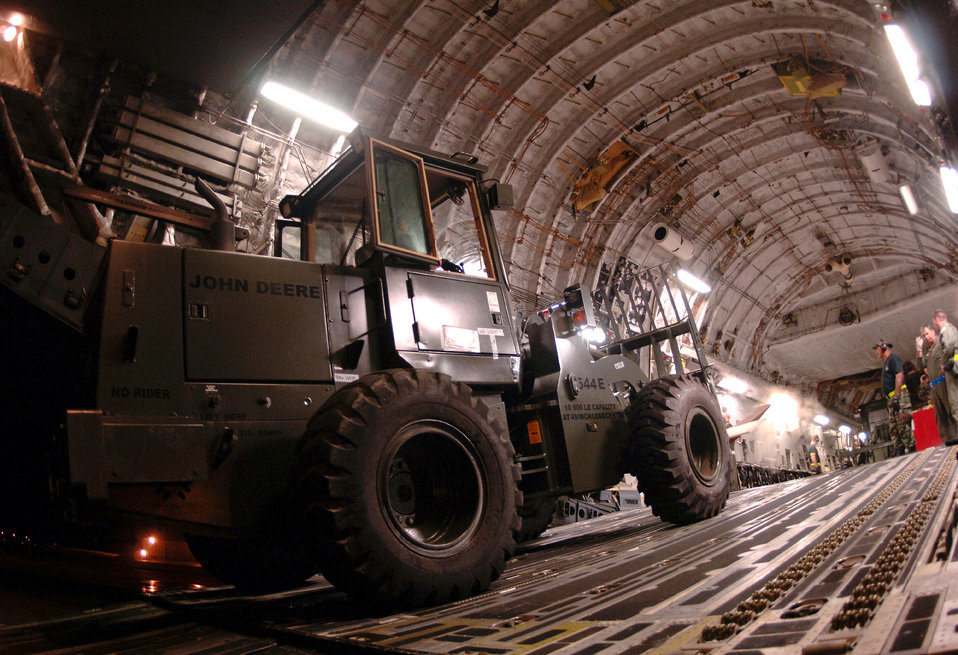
Relief on the way

ANDERSEN AIR FORCE BASE, GUAM (AFPN) -- Airmen with the 734th Air Mobility Squadron load a forklift onto a C-17 Globemaster III. The C17 is assigned to the 535th Airlift Squadron from Hickam Air Force Base, Hawaii. Heavy equipment, food and water supplies were transported Feb. 22 to the Philippines in the aftermath of the mudslides on Leyte Island.